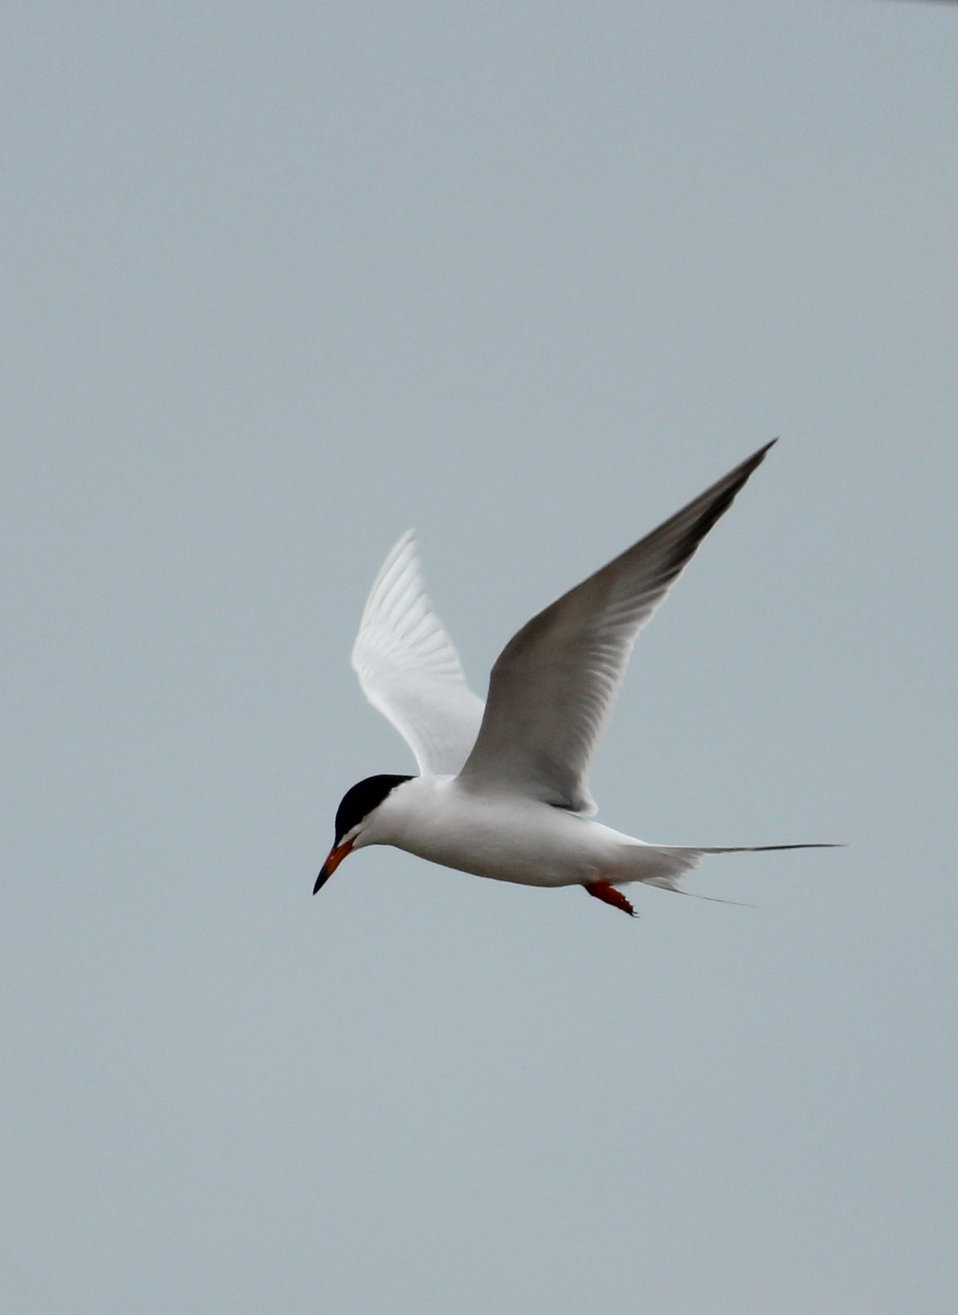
Common Tern

This tern does its best to hover as it searches the wetland below for small fish to eat. Once spotted, the tern folds its wings and plunges out of the sky into the water. This tern was spotted along Highway 11 in McIntosh County, North Dakota.